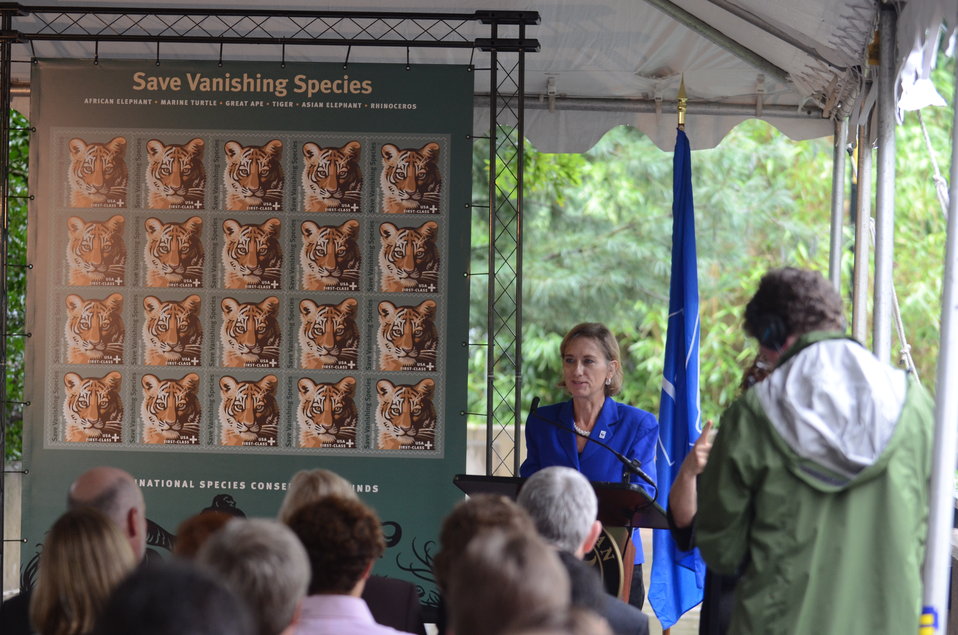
Save Vanishing Species Stamp First Day of Issue